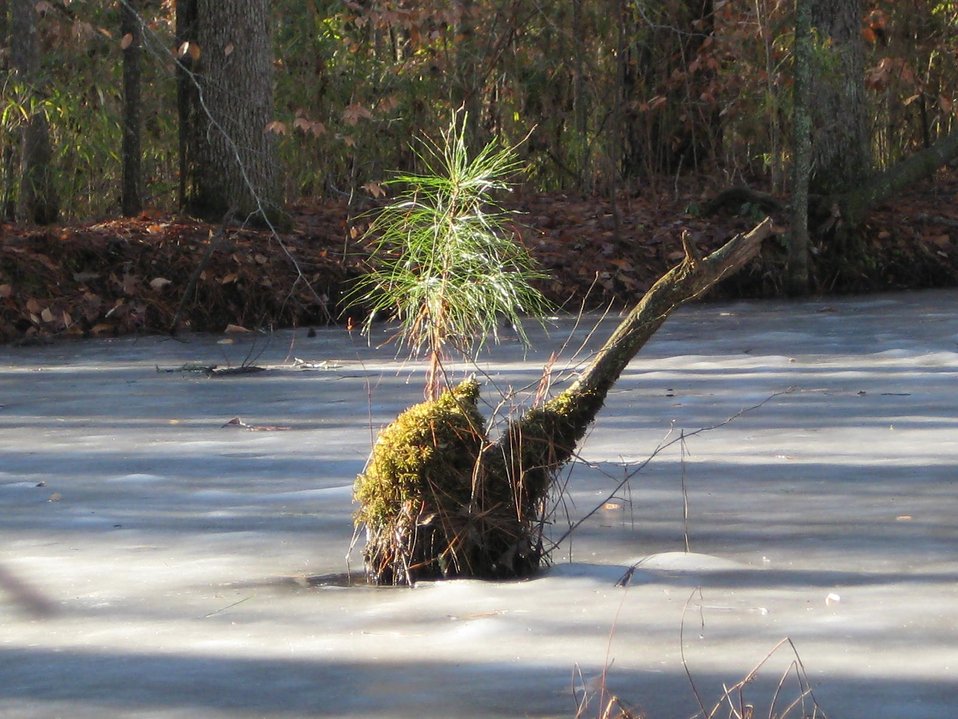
Little Pine Tree On Icy Pond

Great Dismal Swamp National Wildlife Refuge, VA.